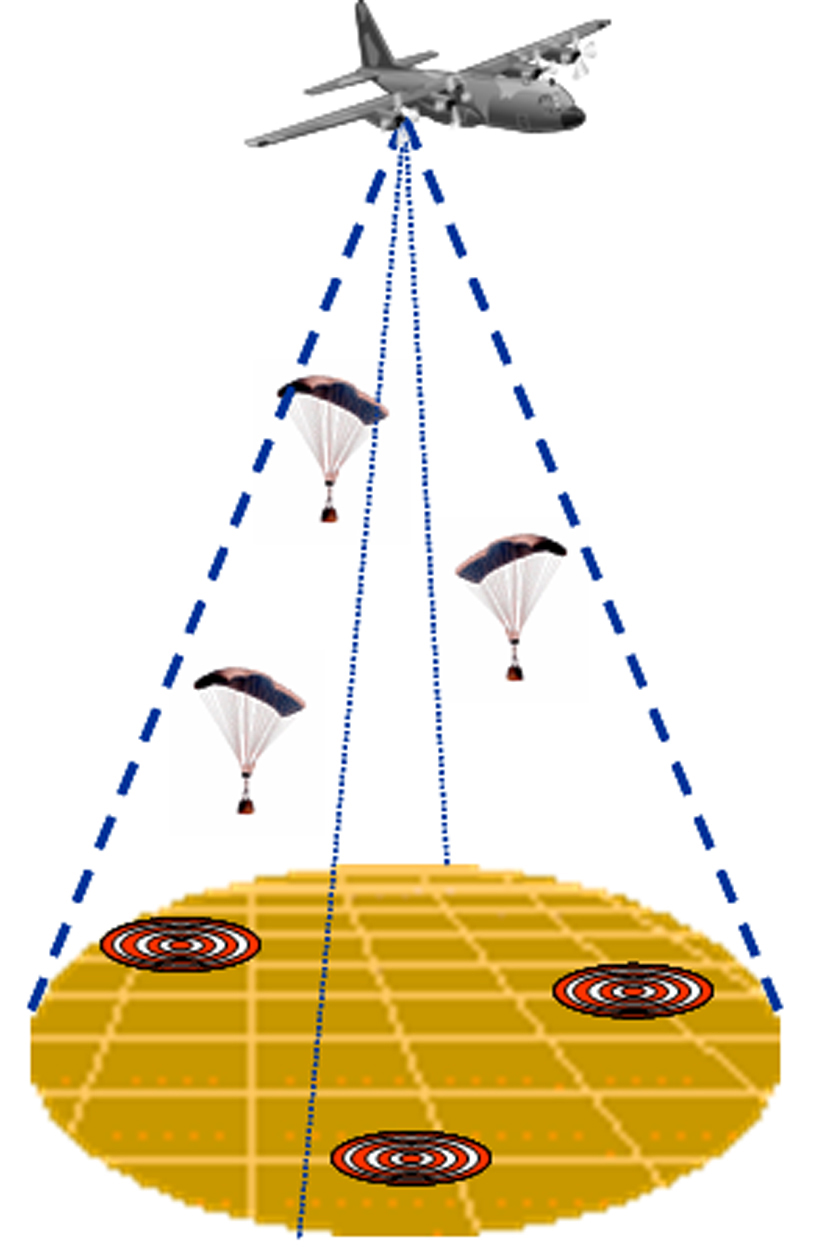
JPADS continues ‘revolution in air drop technology’

This graphic illustration shows how a C-130 Hercules can airdrop supplies to multiple locations using the Joint Precision Air Drop System. The system uses global positioning system-guidance along with steerable parachutes to deliver air drop bundles into multiple landing zones.